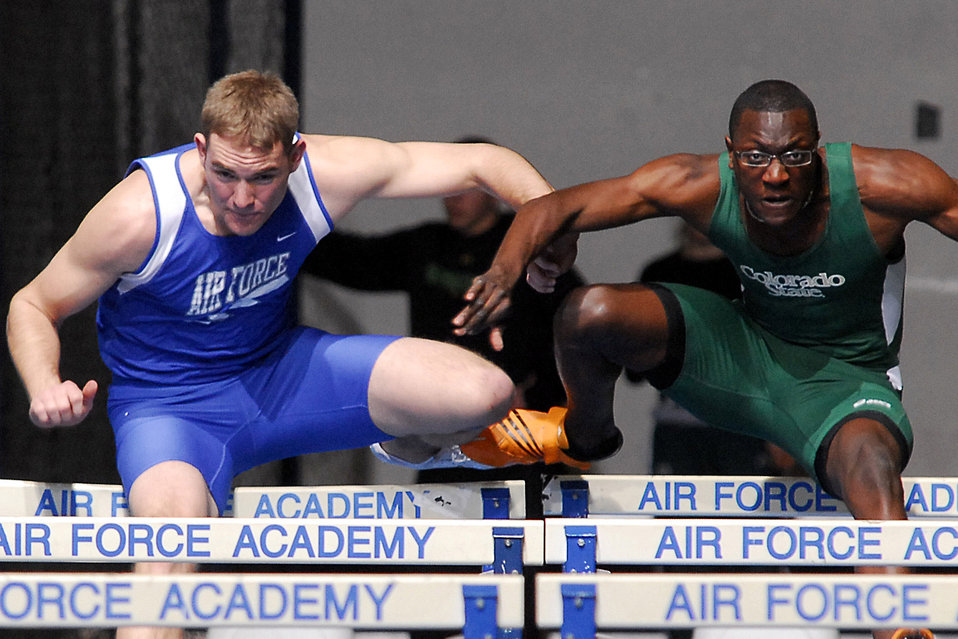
Falcons Conclude Competition at Air Force Open

Junior Skylar Morgan enroute to a sixth-place finish in the 60-meter hurdles in a time of 8:69 seconds. He also cleared the high jump at 6'3?